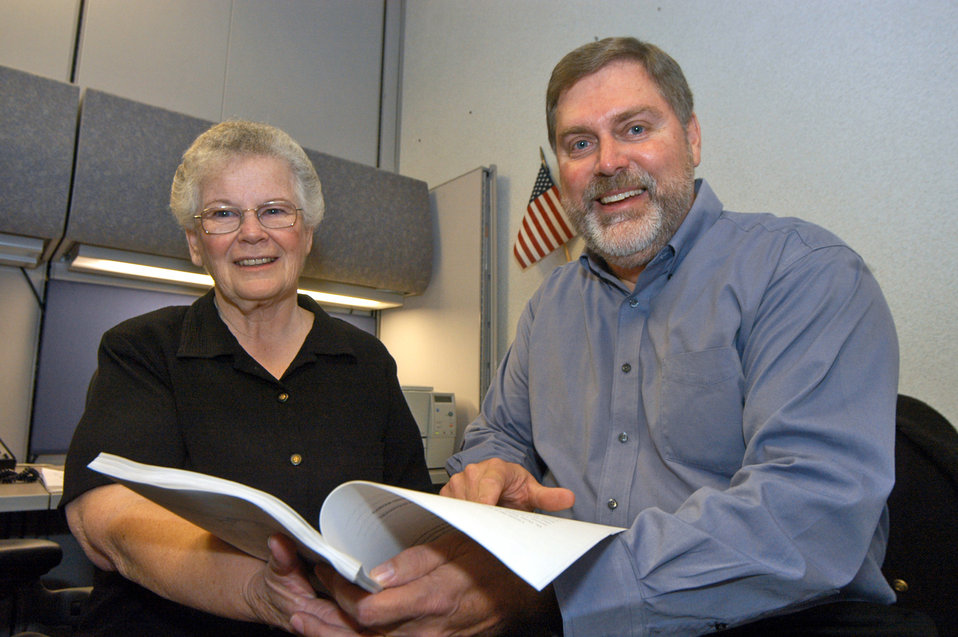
Fate reunites key players in 33-year education odyssey

ROBINS AIR FORCE BASE, Ga. -- Don Jenrette reunites with June Bradley after 30 years to give his former educational counselor a copy of his doctoral dissertation.